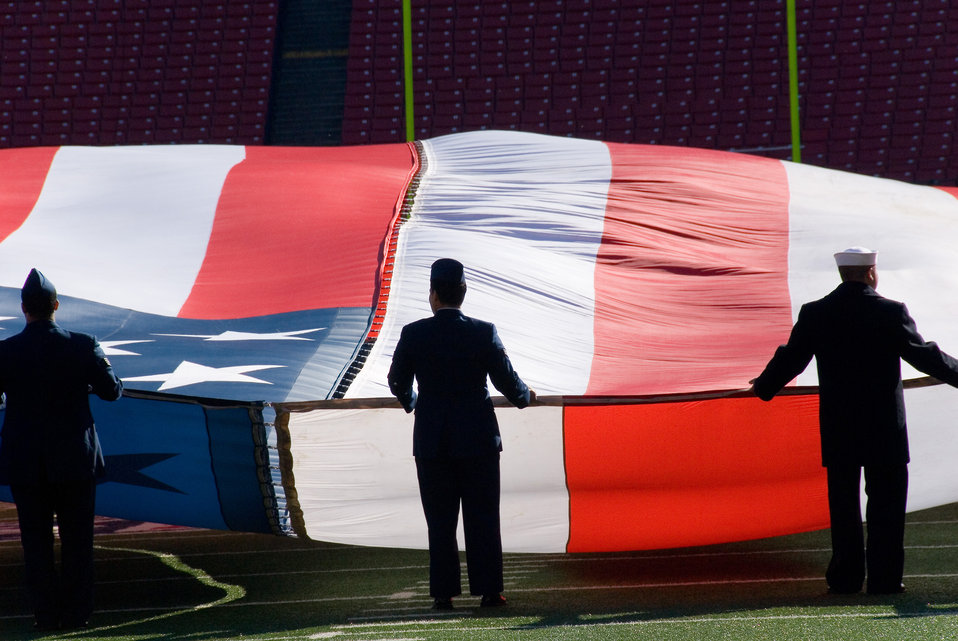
Military Appreciation Day at Meadowlands Stadium, NJ

Servicemembers unveil a giant American flag during the pregame rehearsal for the New York Jets military appreciation football game Nov. 9 at Meadowlands Stadium in New Jersey. Sixty joint servicemembers participated in the flag unveiling.